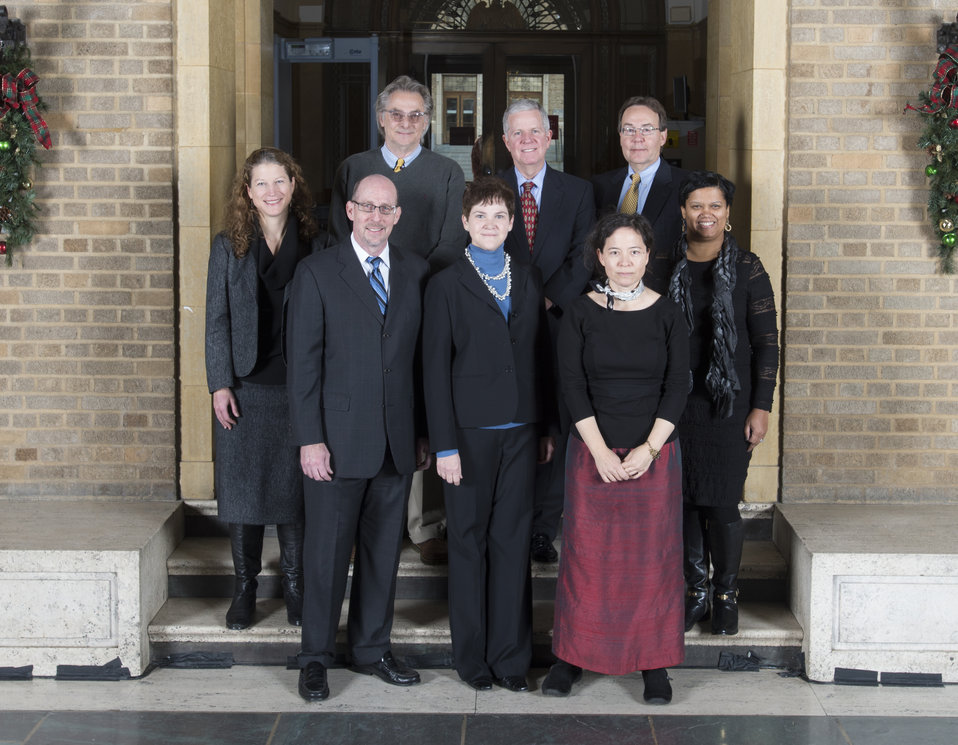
Agriculture Deputy Secretary Krysta Harden stands with the Foreign Agricultural Service (FAS) Labor-Management Forum on the patio at the U.S. Department of Agriculture (USDA) in Washington, D.C. on Wednesday, Dec. 11, 2013. The team received the Secretary’s Honor Award for significantly enhancing labor-management relations, resulting in greater efficiencies in achieving Agency goals and a more positive environment for all Agency employees.